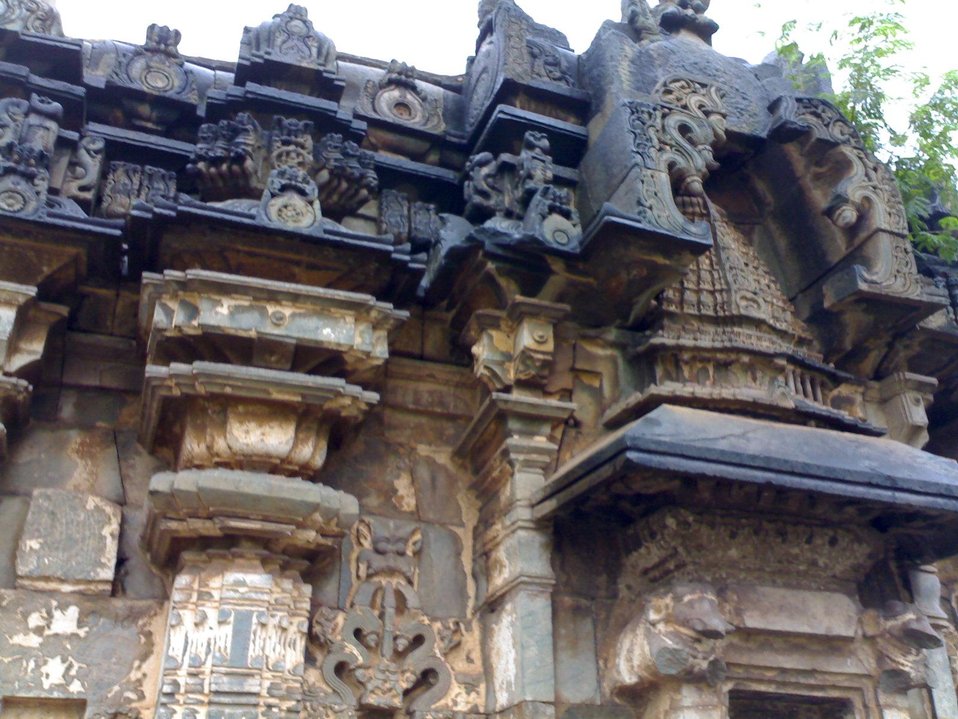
Gadag Trikuteshwara temple complex